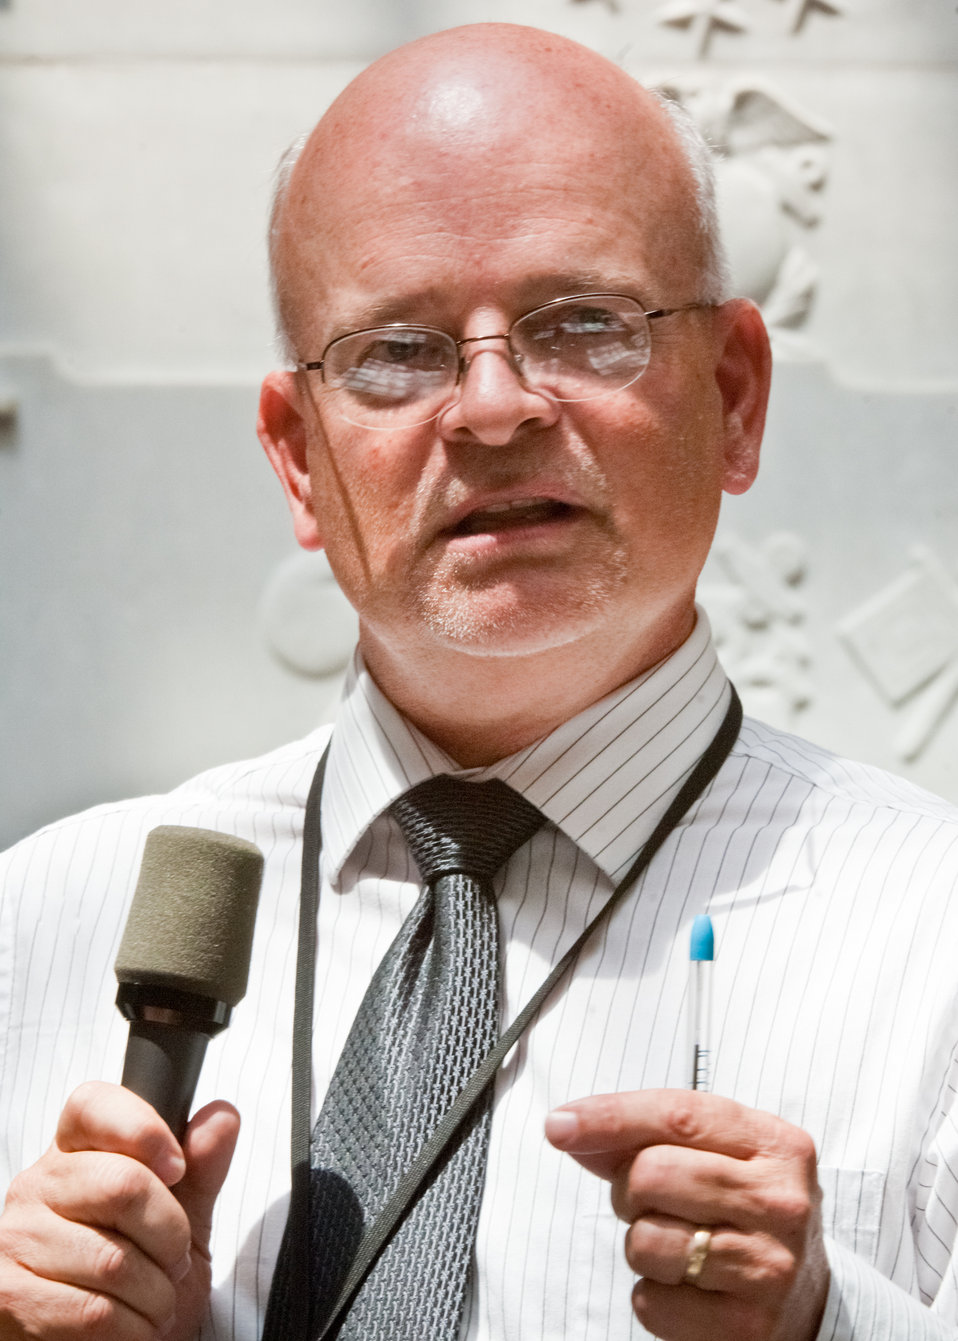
Owen Unangst, Director, Innovations and Emerging Technologies, Office of the Chief Information Officer explains telework technologies available to employees during a “Telework Program Party/Brown Bag” event on the patio of the Jamie Whitten Building of United States Department of Agriculture, in Washington, DC, on Tuesday, June 7, 2011. The event included an interactive telework panel and exhibits from the field of telework, telecommuting and mobile work environments. The event was open to all USDA employees, supervisors, managers, human resources staff and USDA telework program coordinators.